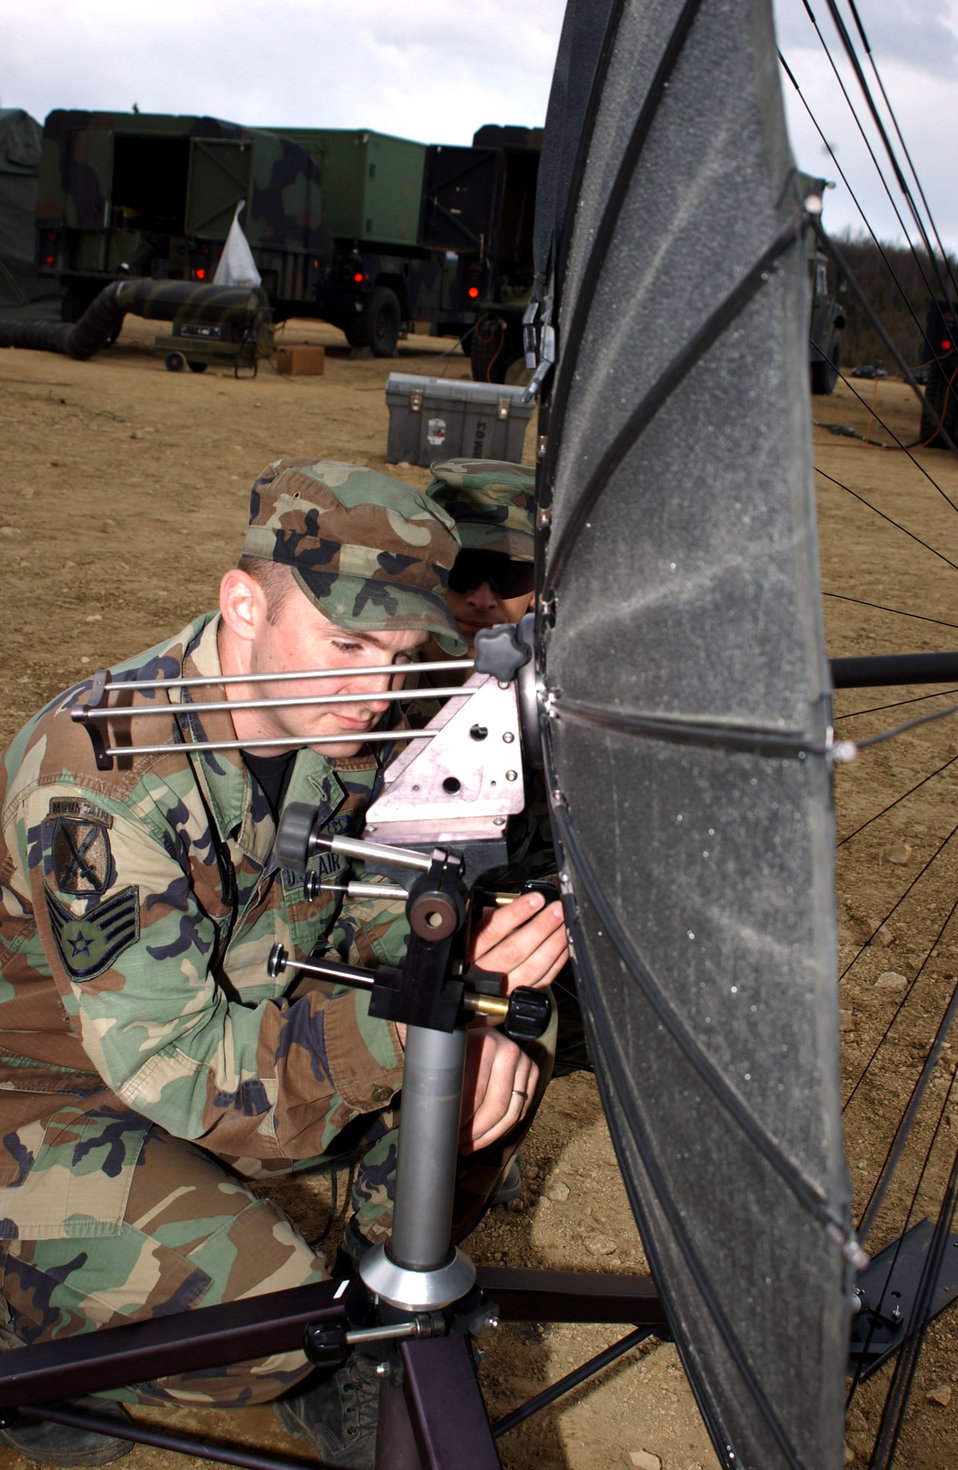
Practice makes perfect during Ursa Minor

Staff Sgt. Glenn Harrison and Senior Airman Scott Tyler (partially hidden) set up a Tactical Very Small Aperture Terminal dish May 15 to receive weather model images via satellite to predict future weather conditions in the field. The two 3rd Air Support Operations Squadron Airmen are participating in Operation Ursa Minor, a three-day field training exercise at Eielson Air Force Base, Alaska, designed to provide hands-on combat training and experience to Airmen before they deploy to a combat area.